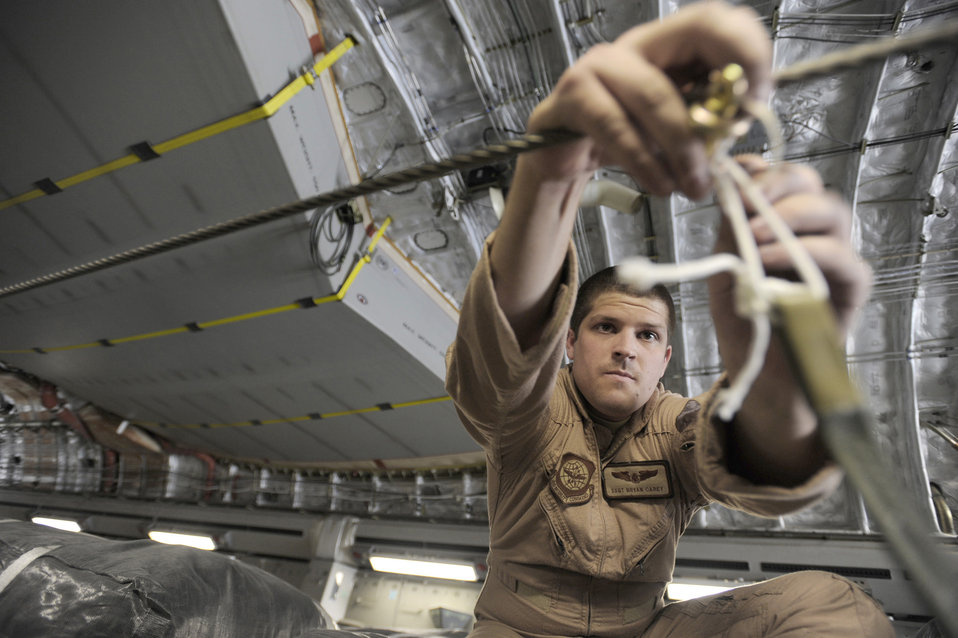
Operation Enduring Freedom

Staff Sgt. Bryan Carey hooks parachute draw cords to container-delivery-system bundles prior to take off for an airdrop mission May 9, 2010, at an undisclosed air base in Southwest Asia. Sergeant Carey is a C-17 Globemaster III loadmaster assigned to the 816th Expeditionary Airlift Squadron.